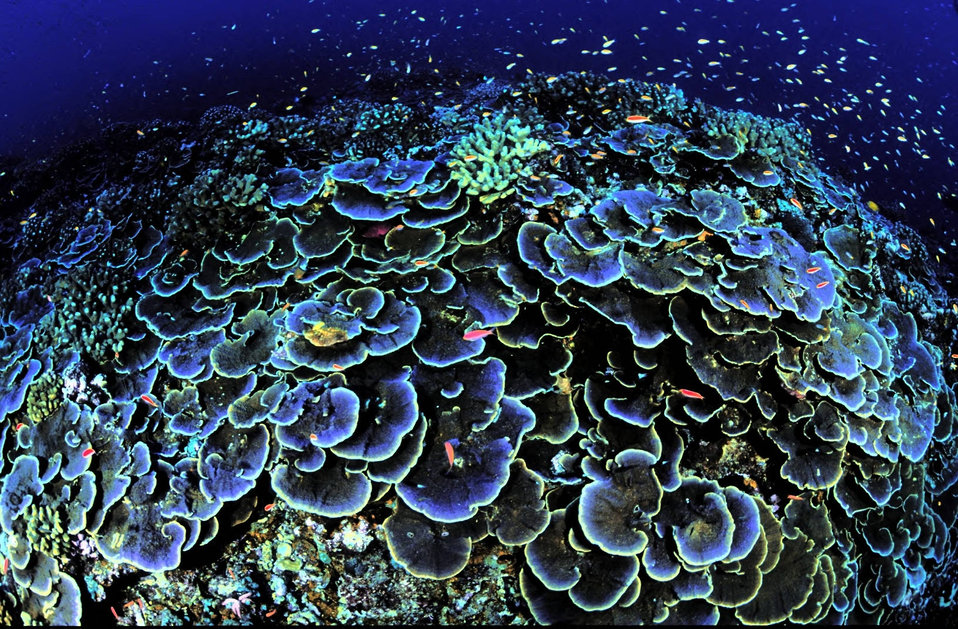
Coral at Jarvis Island National Wildlife Refuge

Photo credit: USFWS/Jim Maragos

Even the most optimistic predictions of future atmospheric CO2 concentrations (such as stabilization at 450 parts per million) could cause coral reefs to no longer be sustainable